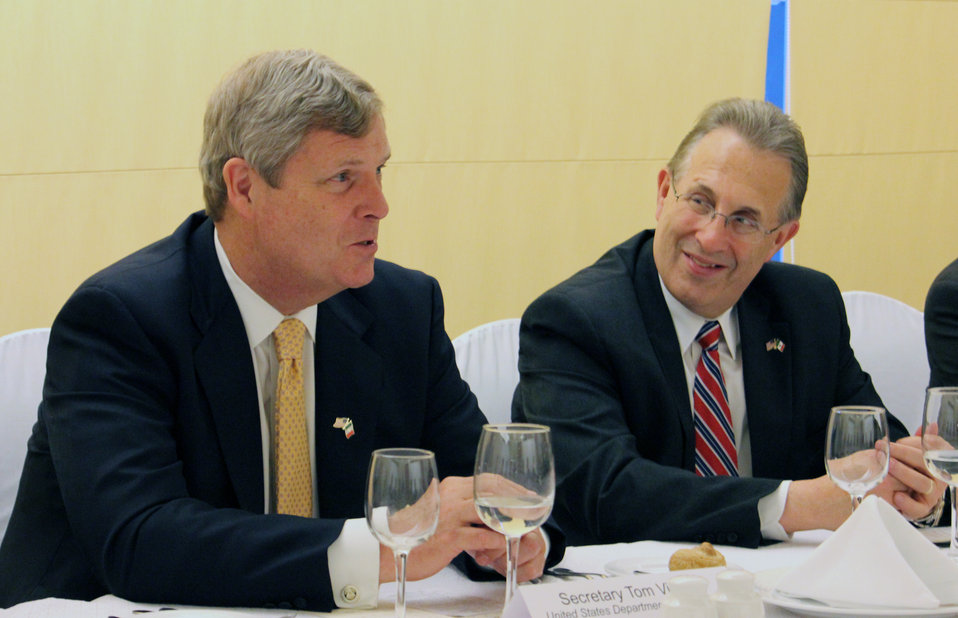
Agriculture Secretary Tom Vilsack and U.S. Ambasador to Mexico Anthony Wayne meet with Mexican producers at the U.S. Trade Mission to Mexico on Friday, May 17, 2013.